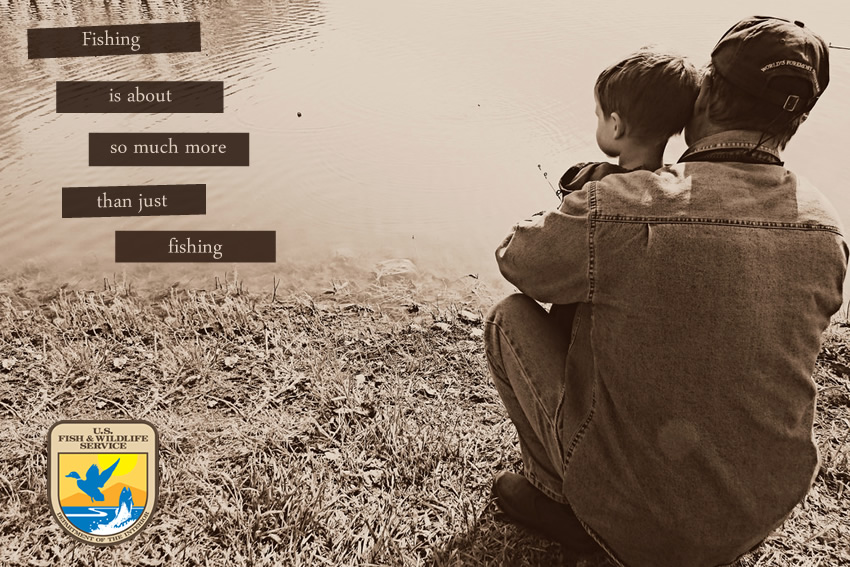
More Than Just Fishing

The 2014 Kid's Fishing Derby at Gavins Point National Fish Hatchery was about more than catching fish.